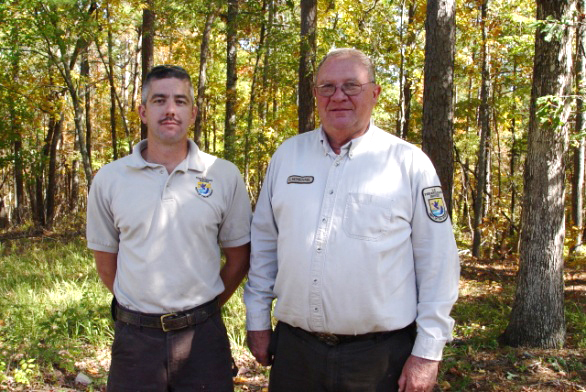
Toby Price and Glenn McMichael

Toby Price (left) and Glenn McMichael, Engineering Equipment Operators at Piedmont National Wildlife Refuge in Georgia, both served in the military. McMichael served in the Army in Vietnam in 1970-1971. Price has 15 years in the Navy Seabees thru Present Day. He served in Iraq in 2004 and has an upcoming Deployment to Afghanistan.